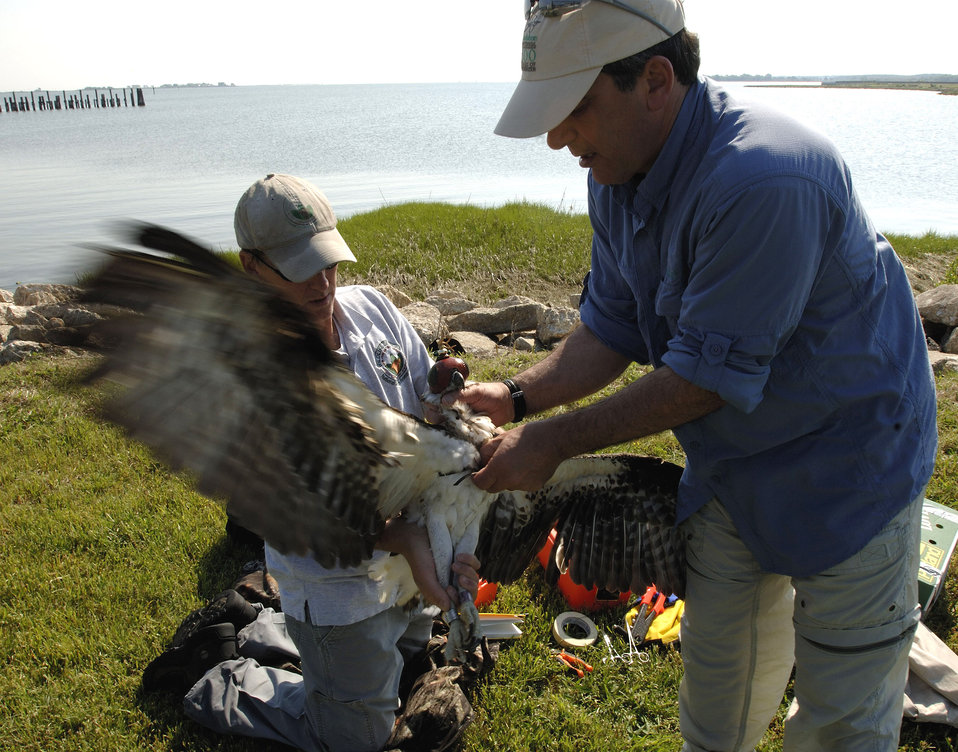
Osprey tracking

Brian Dorr of the U.S. Department of Agriculture holds an osprey as Mark Martell of the Minnesota Audubon Society fits it with a tracking device at Langley Air Force Base, Va., on Wednesday, May 17, 2006. The department is collecting, tagging and tracking the birds to reduce conflicts with base aircraft.